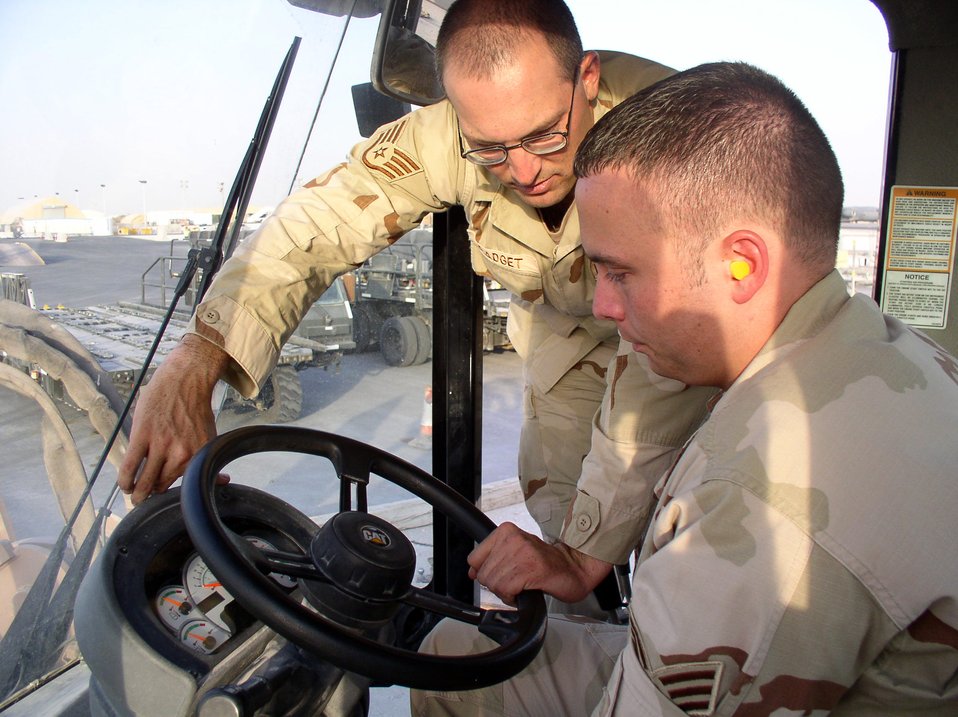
Forklift OJT

Staff Sgt. John Padget instructs Senior Airman Richard Sanders on the operation of an all-terrain forklift at a forward operating location in Southwest Asia on July 3. The Airmen are with the 379th Expeditionary Operational Support Squadron.